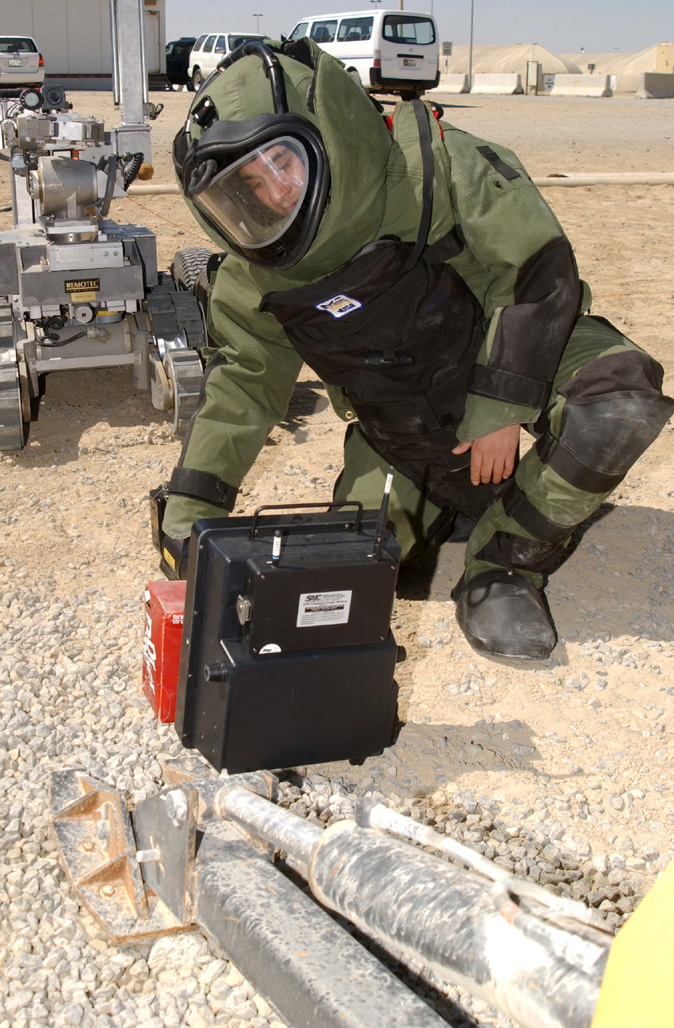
Suited up

SOUTHWEST ASIA -- Bomb protection suits and robots are tools of the trade for explosive ordnance disposal technicians when dealing with unexploded devices. Senior Airman Guillen Hugo is assigned to the 380th Expeditionary Civil Engineer Squadron here.